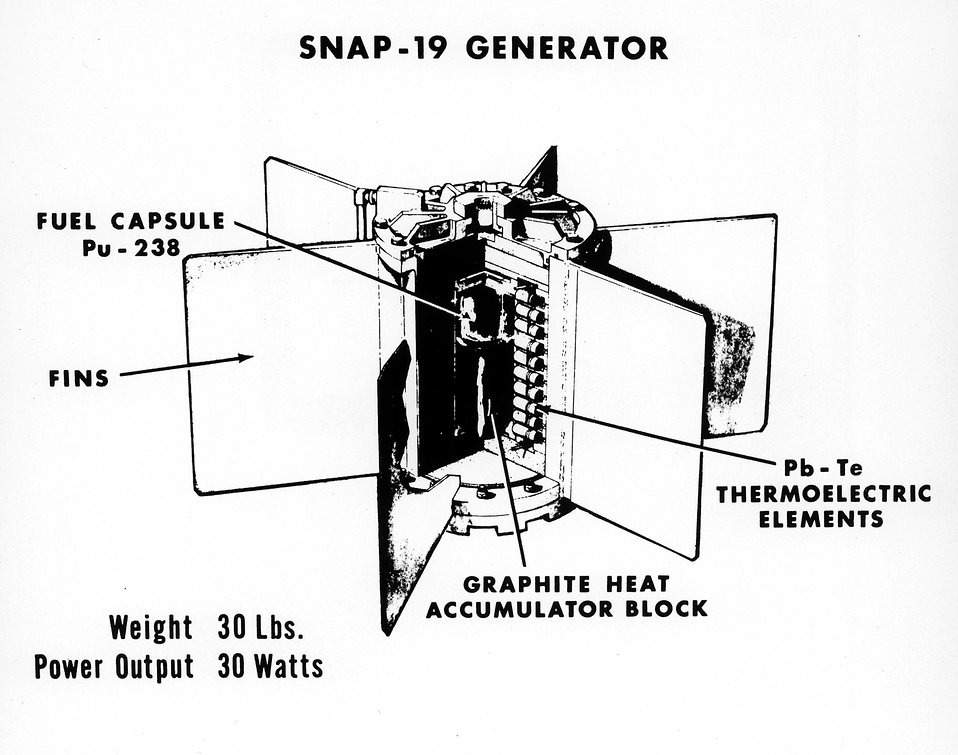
Cutaway of SNAP-19 isotopic power generator being developed by the Atomic Energy Commission to provide some of the power for the NASA Nimbus-B weather satellite, scheduled to be launched late 1967.